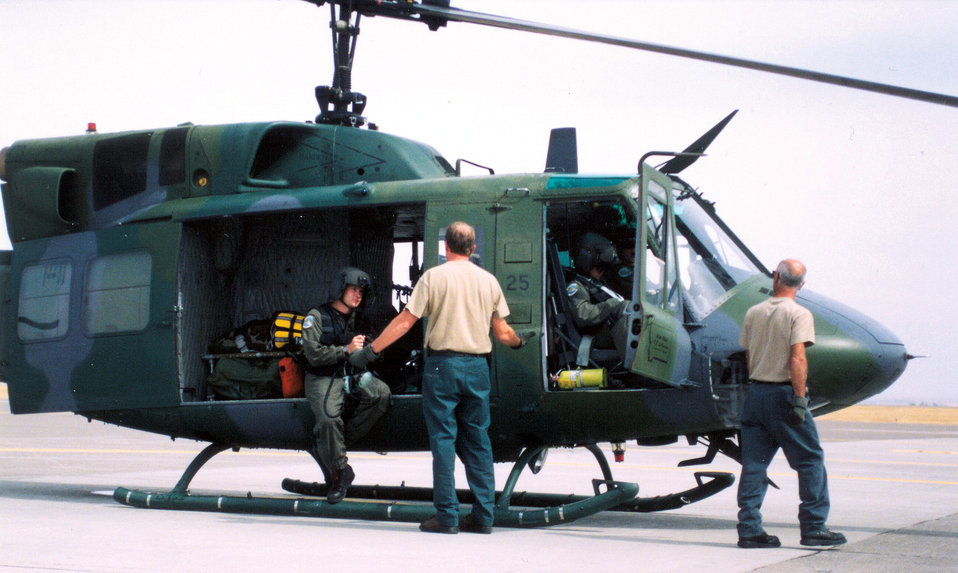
Rescue chopper

MALMSTROM AIR FORCE BASE, Mont. -- A UH-1N Huey crew returns here safely after a successful rescue Aug. 12.